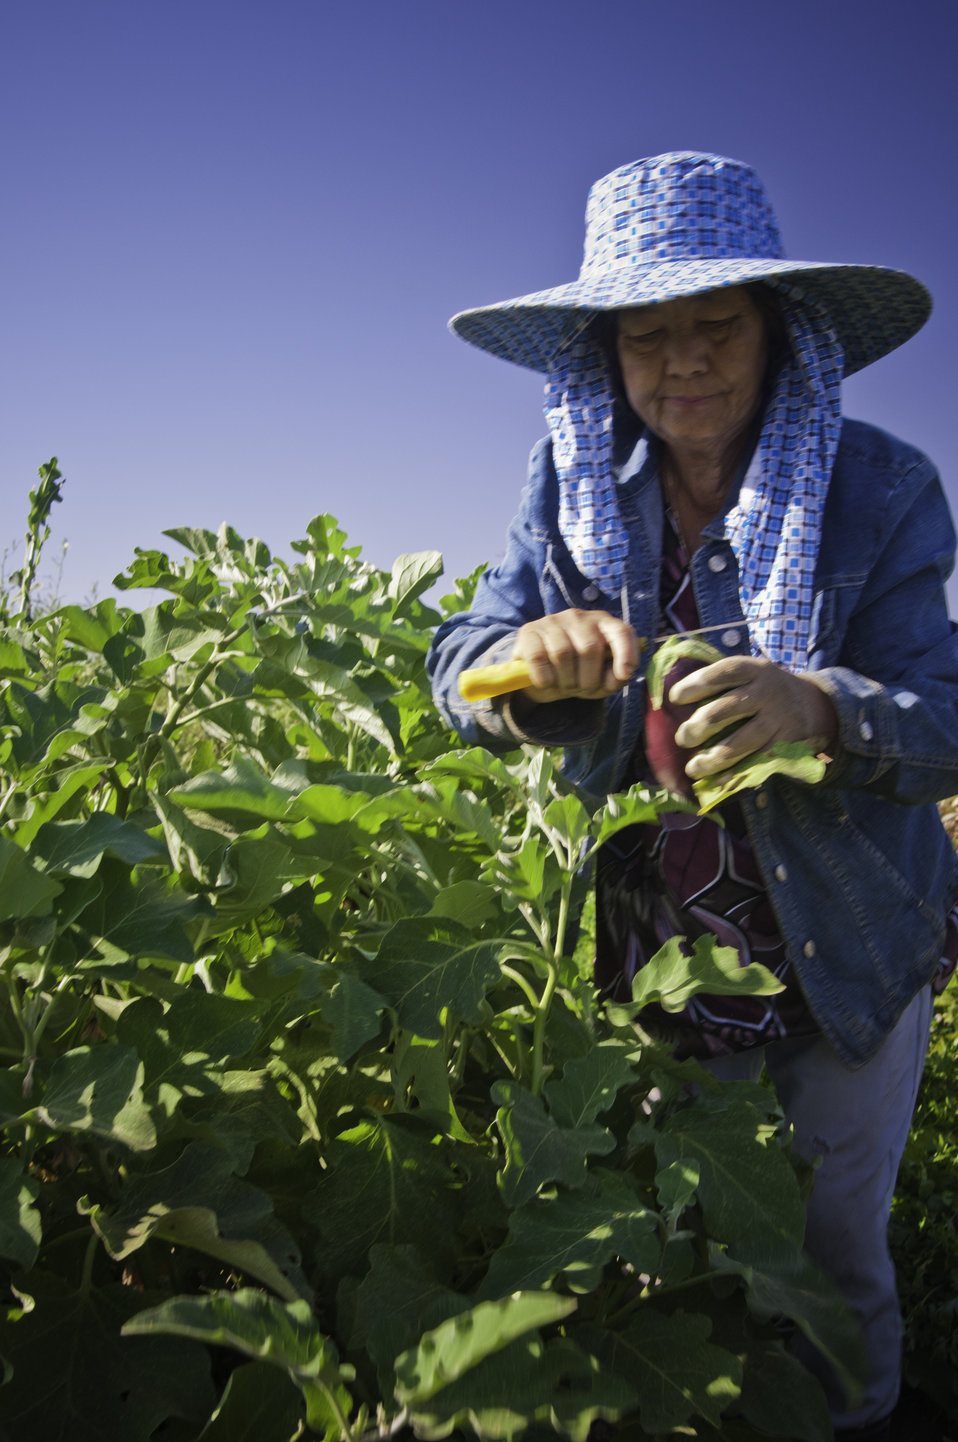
May Young Vu a Hmong farmer harvesting eggplant on her farm May's Flower's in Sanger, California on Thursday, August 29, 2013.